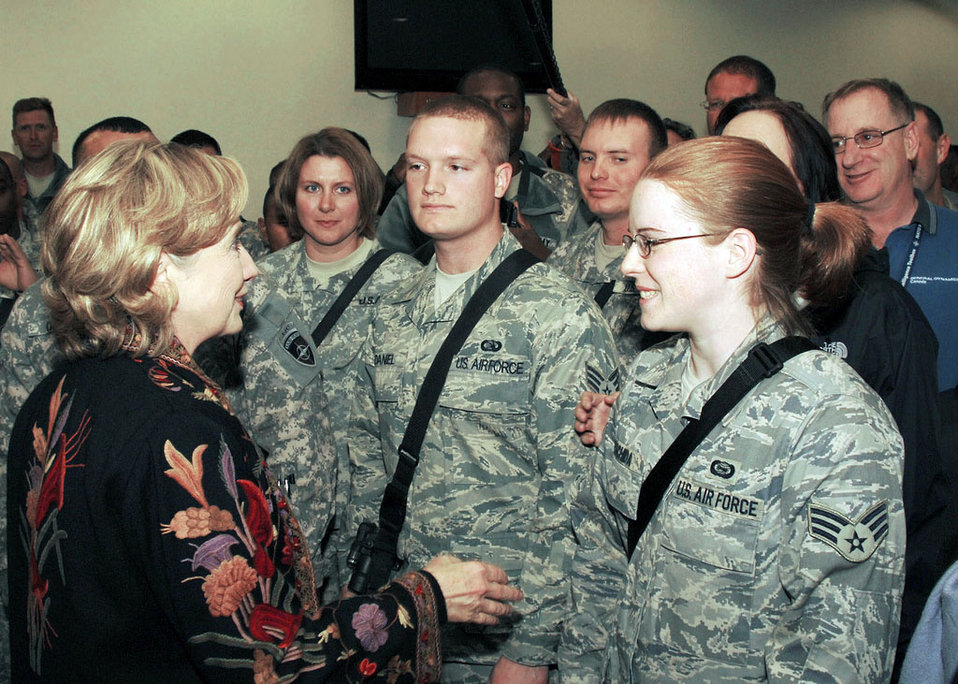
U.S. Secretary of State visits servicemembers in Afghanistan

Secretary of State Hillary Rodman Clinton shakes hands with United States civilian and military personnel after a speech she gave Nov. 19, 2009, at the ISAF Joint Command located at the North Kabul International Airport military compound. Secretary Clinton talked about the sacrifices of the servicemembers and thanked them for their service. She wished everyone a happy Thanksgiving.